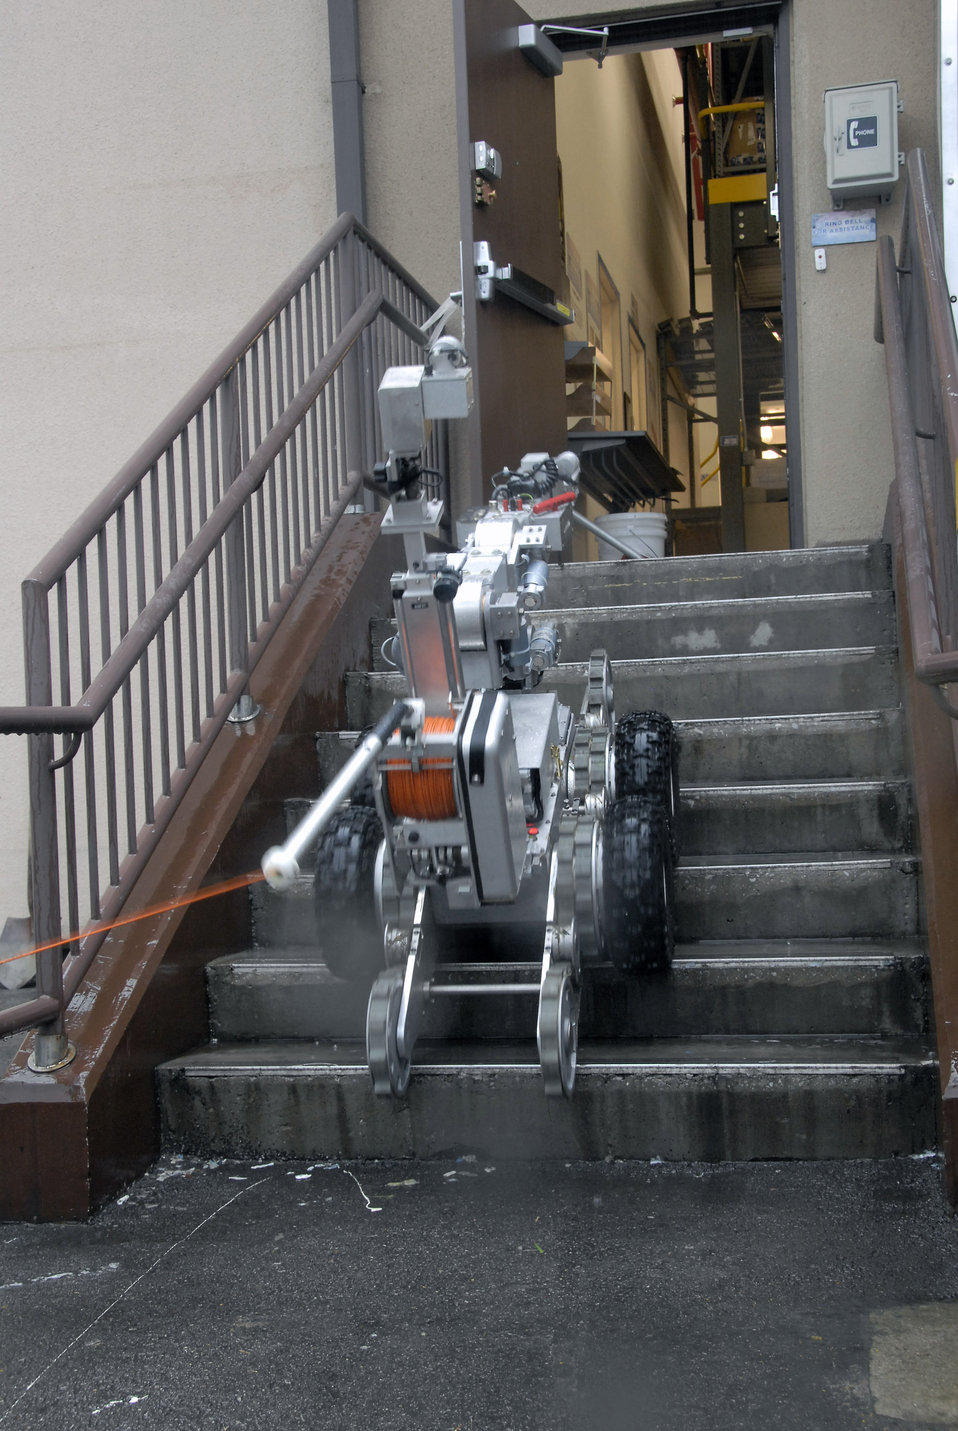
Handle with care

An F6A robot, used by explosive ordnance disposal Airmen with the 51st Civil Engineer Squadron at Osan Air Base, South Korea, prepares to remove a suspicious package at the base post office during a base-wide exercise July 24. The robot is equipped with several television cameras for remote viewing and a dexterous arm for hazardous tasks.